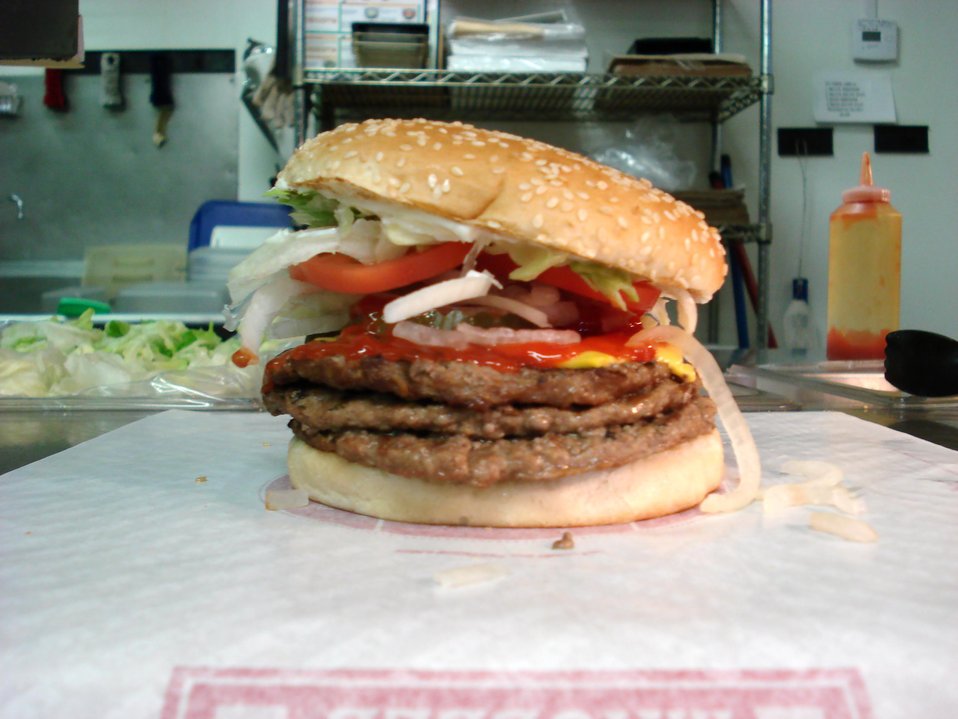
This is a picture I took while making this sandwich. This is the sandwich at it's final stage before it is wrapped up to give to the customer.